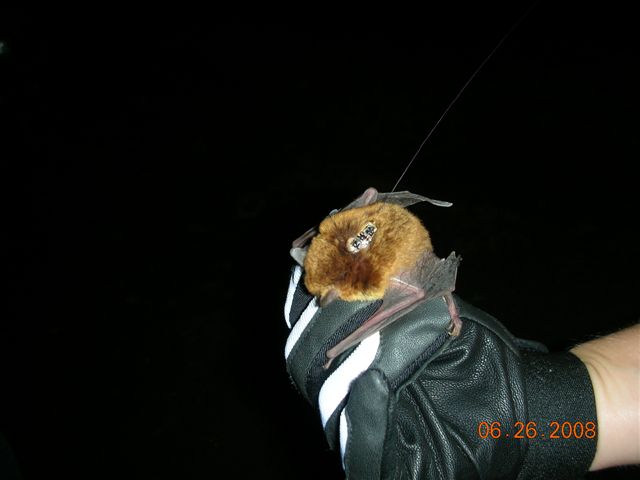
Southeastern myotis with radio transmitter